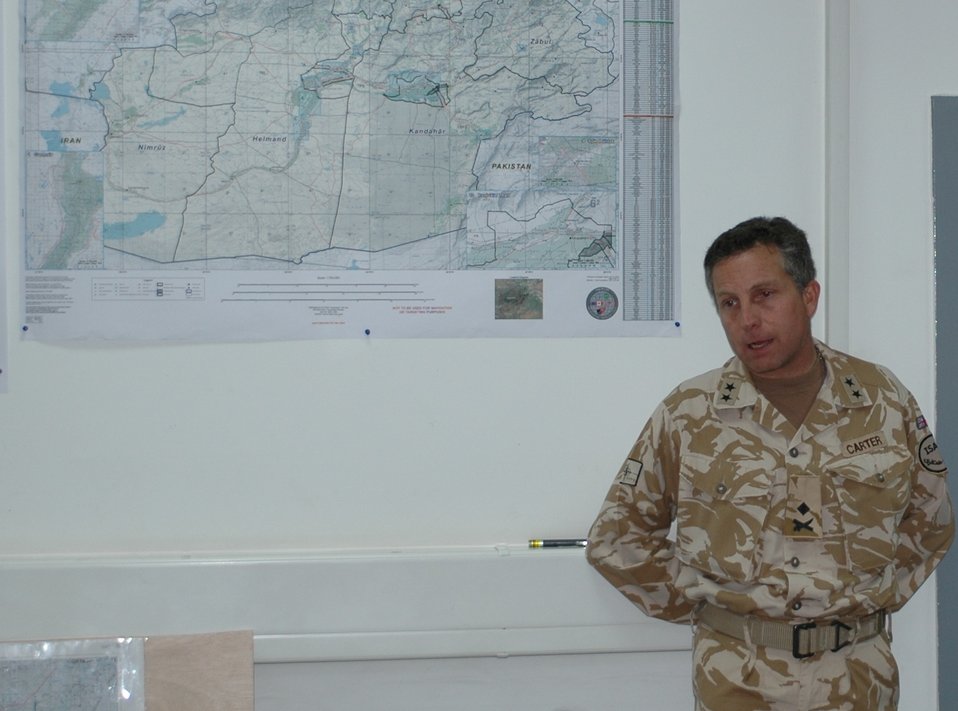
CODEL Berman